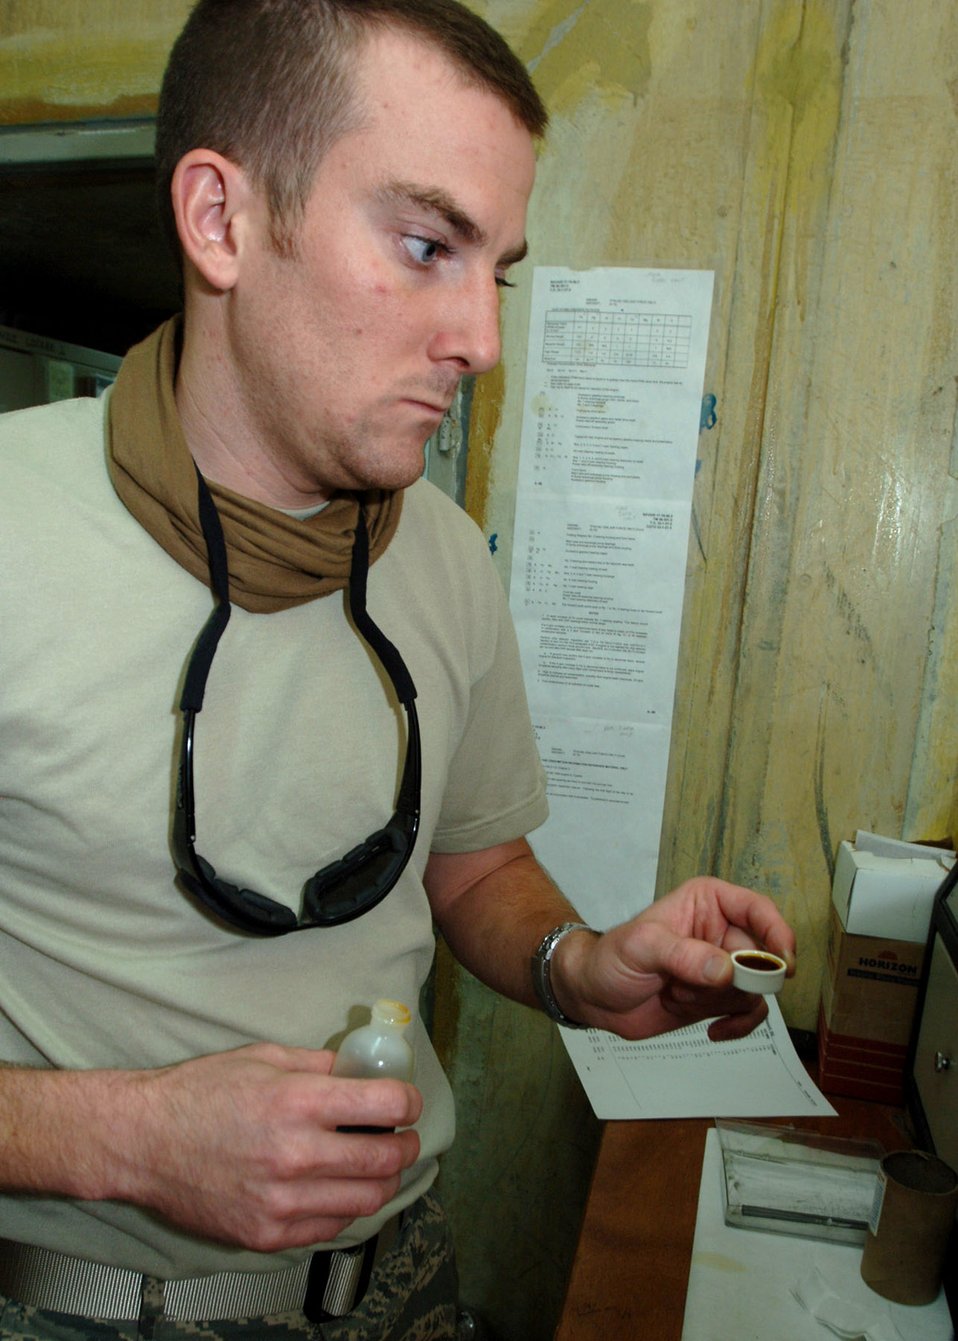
Checking the burn

Staff Sgt. Anthony Phillips prepares a sample of engine oil from an A-10C Thunderbolt II to be analyzed by a spectrometer at Al Asad Air Base, Iraq. The spectrometer burns fluids to discover contaminants that would signify wear and tear to the aircraft's engines. Sergeant Phillip is a nondestructive inspections technician with the 438th Expeditionary Aircraft Maintenance Squadron, and is deployed from the Kentucky Air National Guard's 123rd Tactical Airlift Wing.